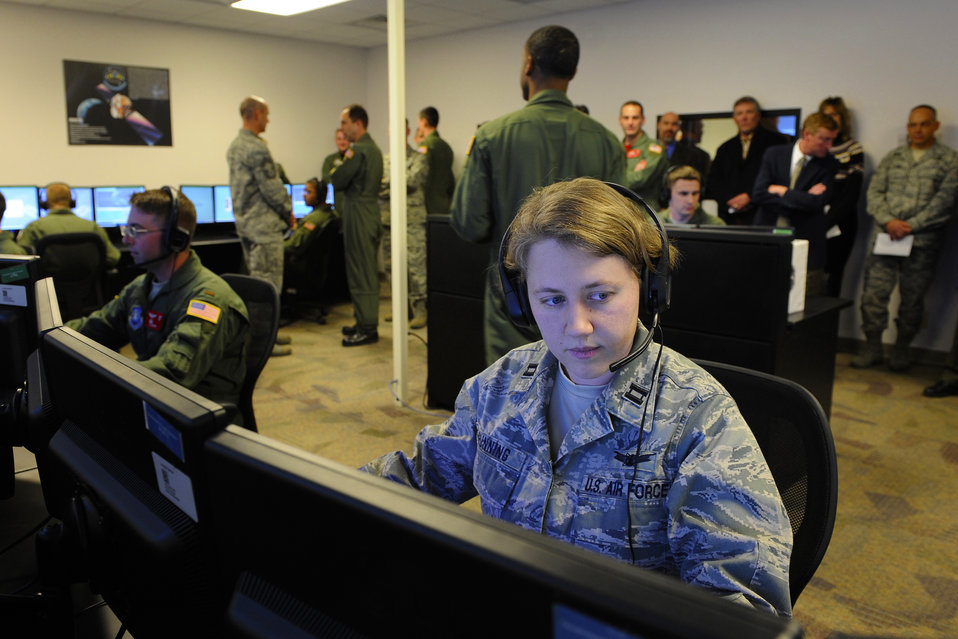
SSTITC at Shriever

Capt. Jennifer Gunning sits at a student station in the new Standard Space Trainer Integrated Training Center following a ribbon cutting that signified the official opening of the new system Feb.4, 2011, at Schriever Air Force Base, Colo. Captain Gunning is assigned to the 50th Operational Support Squadron.